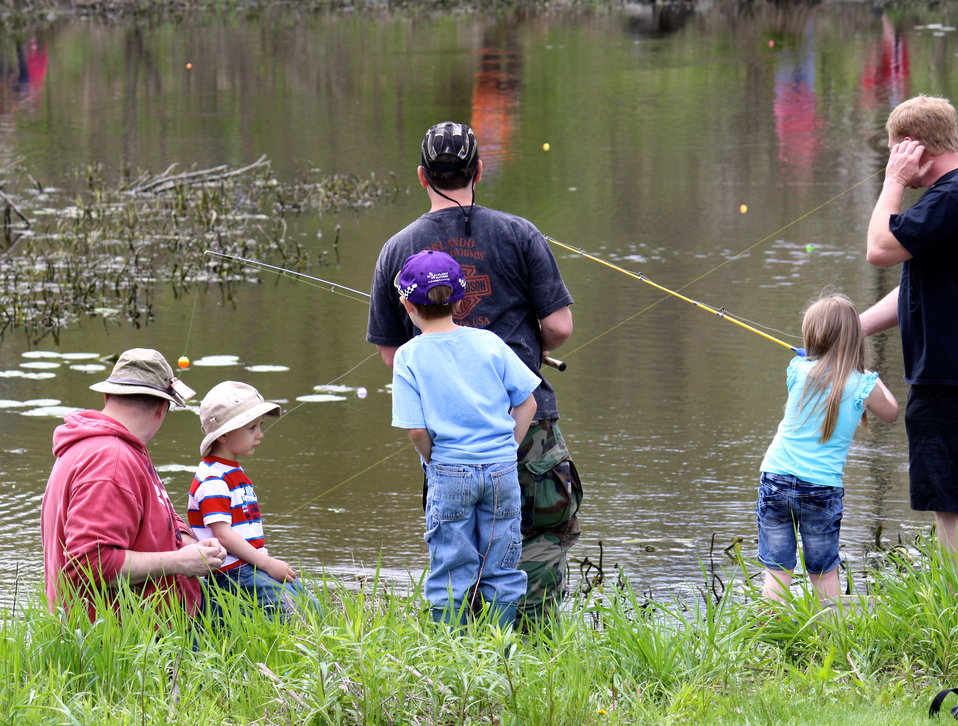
Kids Fishing

Fishing Derby held at the USFWS regional office in Hadley, MA on May 7, 2011.